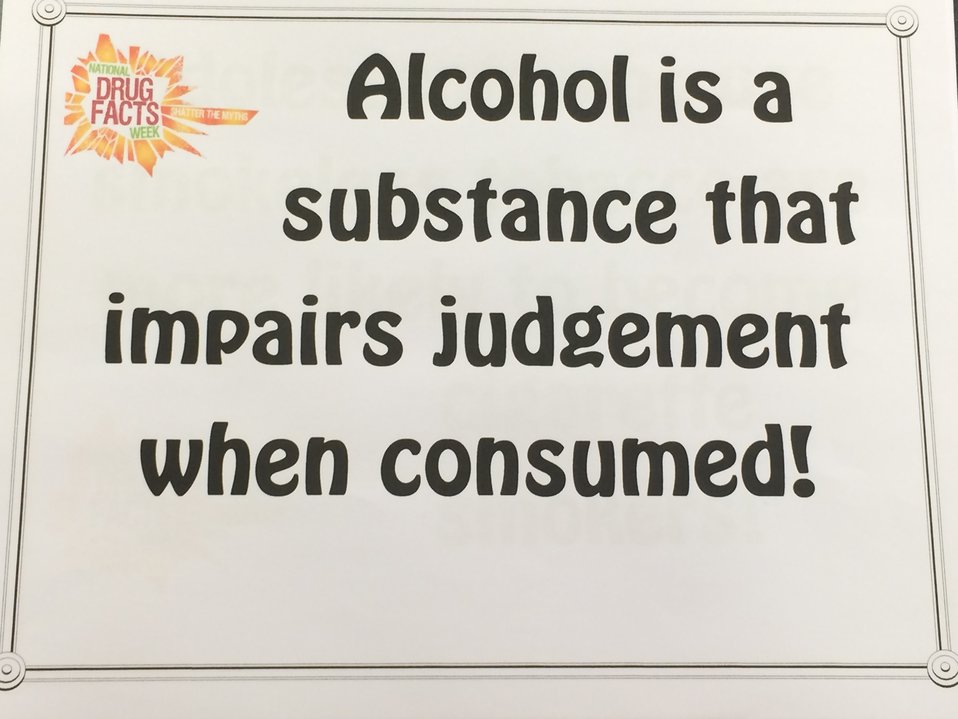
Getting the Word Out

Teenagers from the Van Buren County SAFE Coalition's, Youth Leadership Council (YLC) in Keosauqua, Iowa participate in various events during National Drug Facts Week, 2014.